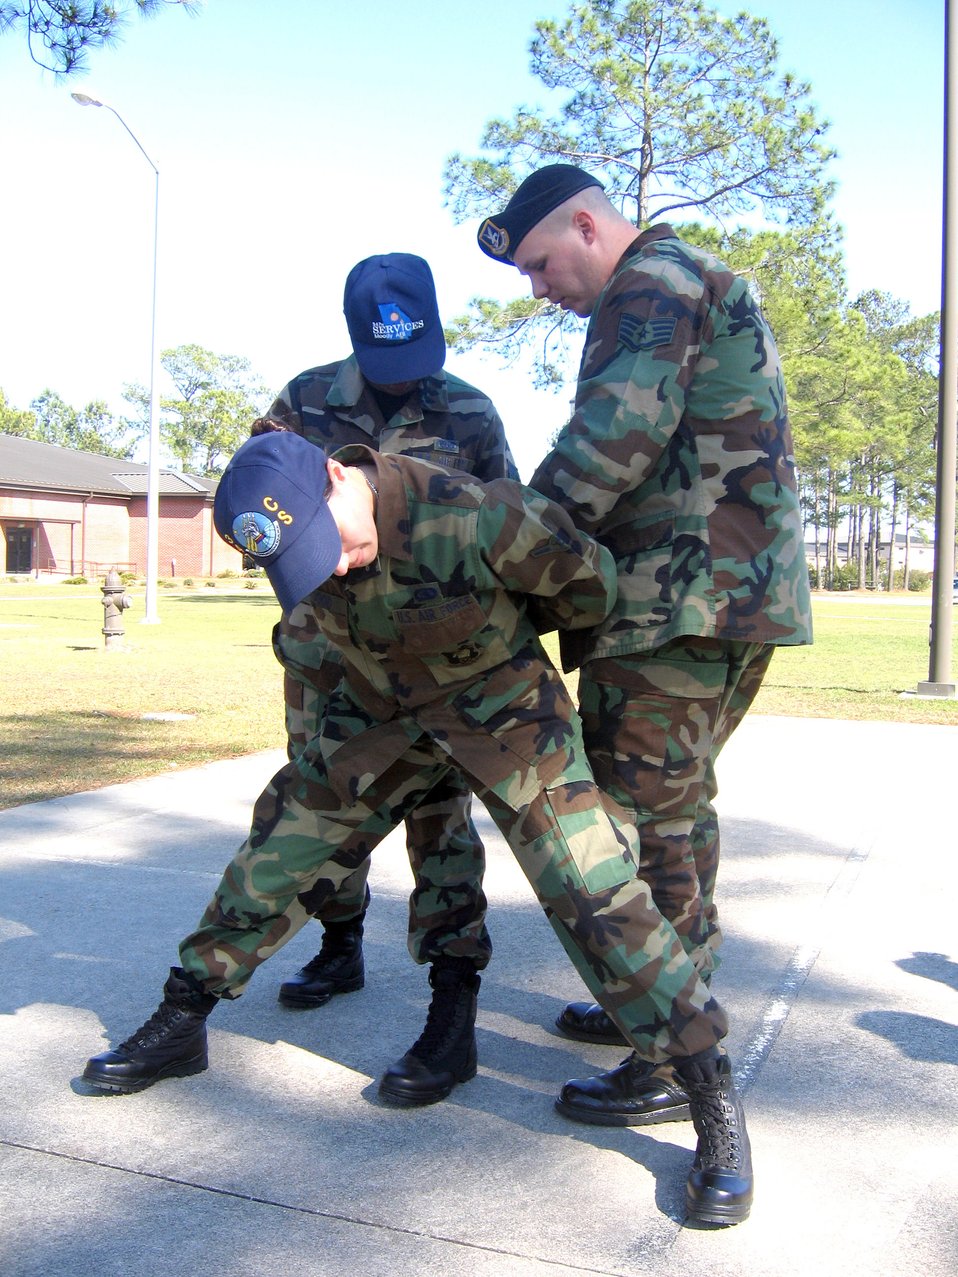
Securty Forces pat down

Staff Sgt. Clinton Ellis shows Staff Sgt. Latasha Stokes and Airman Sarah Hagood proper handcuffing techniques during augmentee training. The five-day course teaches base protection measures. Sergeant Ellis is a 347th Security Forces Squadron augmentee course instructor. Sergeant Stokes and Airman Hogood are first term airmen center students.